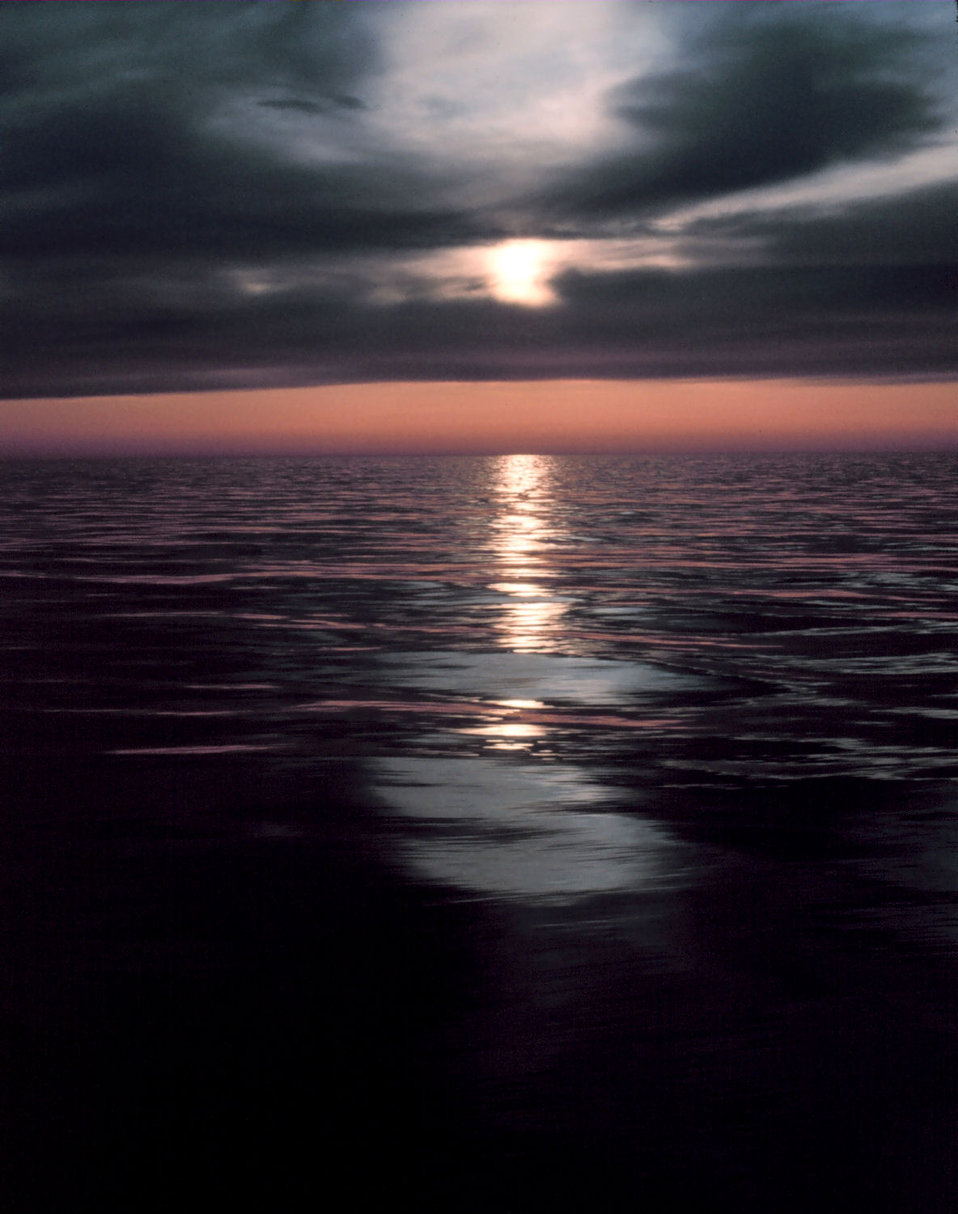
Sun, clouds, and reflection off the ocean.